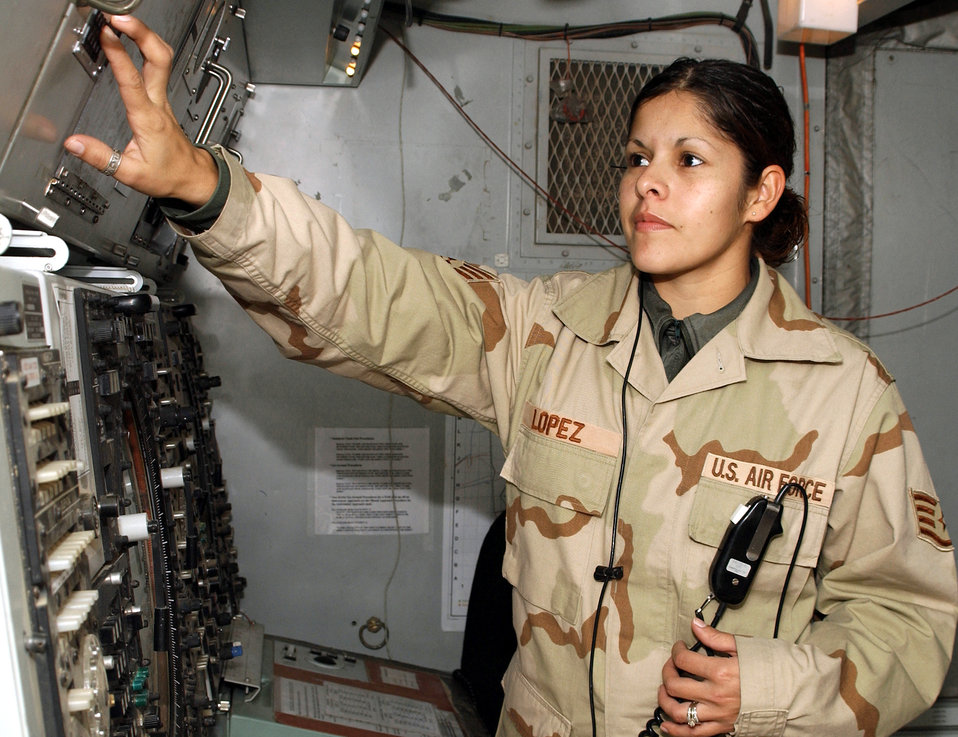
Controlling northern Iraq

KIRKUK AIR BASE, Iraq -- Staff Sgt. Eugenia Lopez monitors equipment in the central radar approach control facility here. The controllers here are responsible for air traffic in all of northern Iraq.